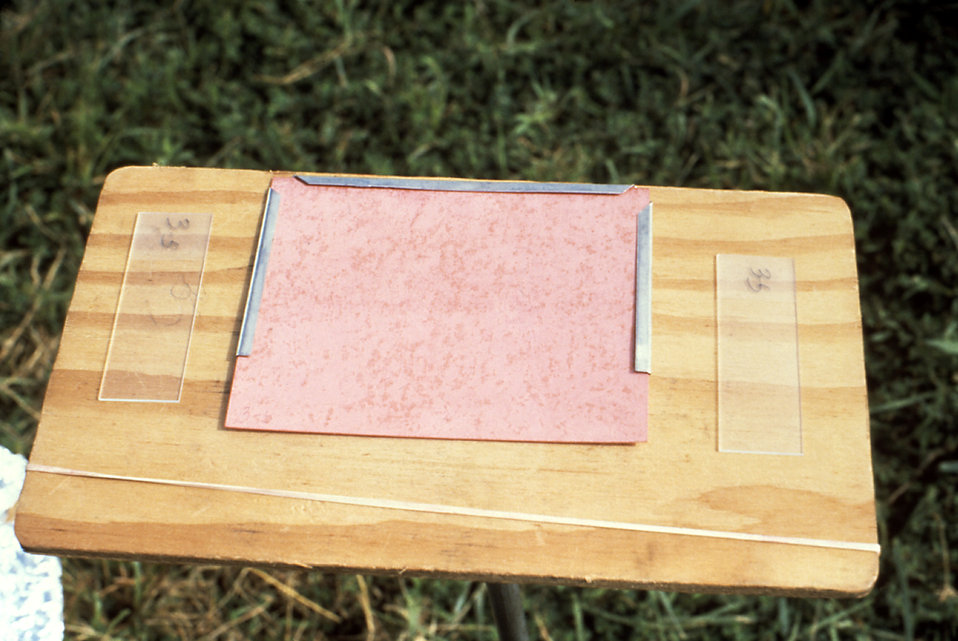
This 1981 photograph depicts the placement of a dye card, and two silicone-coated slides atop a wooden platform, and inside the geographic parameter of a bioassay insecticide study.